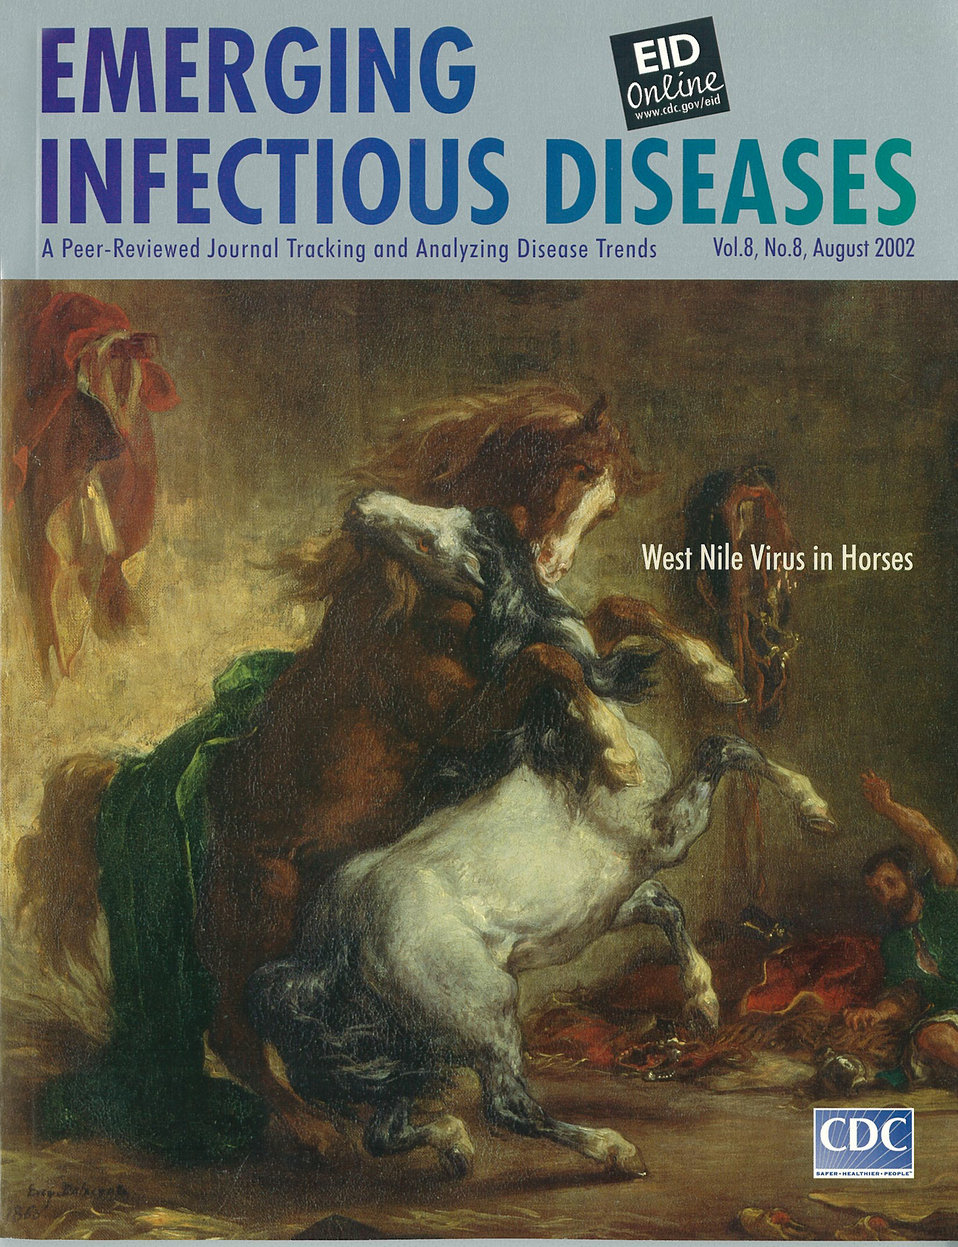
Emerging Infectious Diseases (EID) cover artwork for Volume 8, Number 8, August 2002 issue.